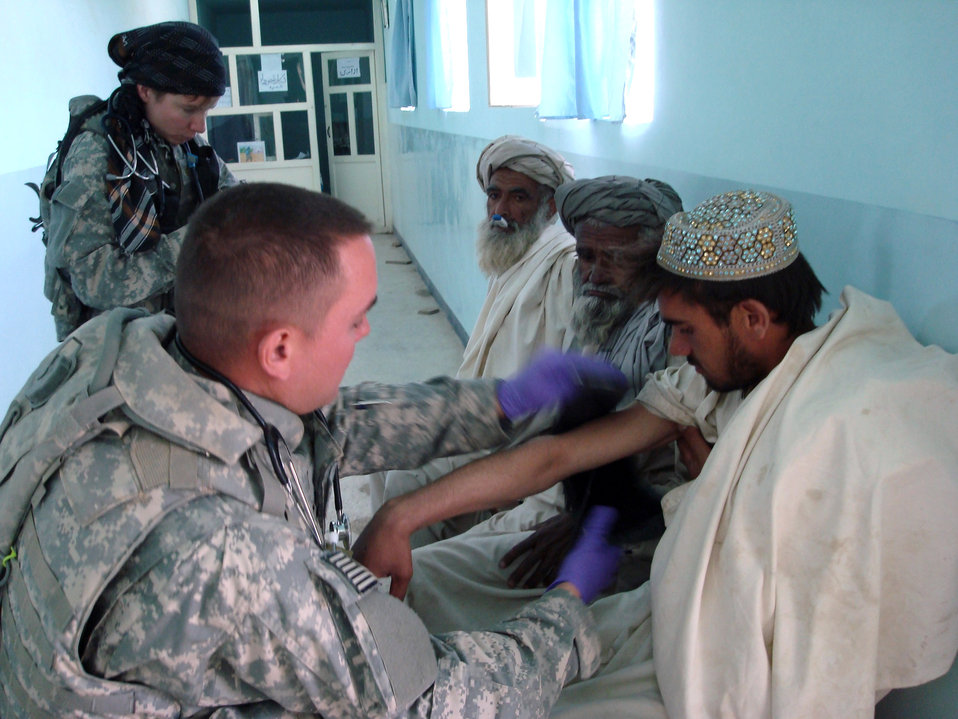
Small meds make big impact in Afghan village

Staff Sgt. Eric Johnston wraps a blood pressure cuff around the arm of an Afghan patient during a Village Medical Outreach Aug. 22 in the Shinkay District, Afghanistan. Nearly 200 people were seen by Provincial Reconstruction Team Qalat medics.